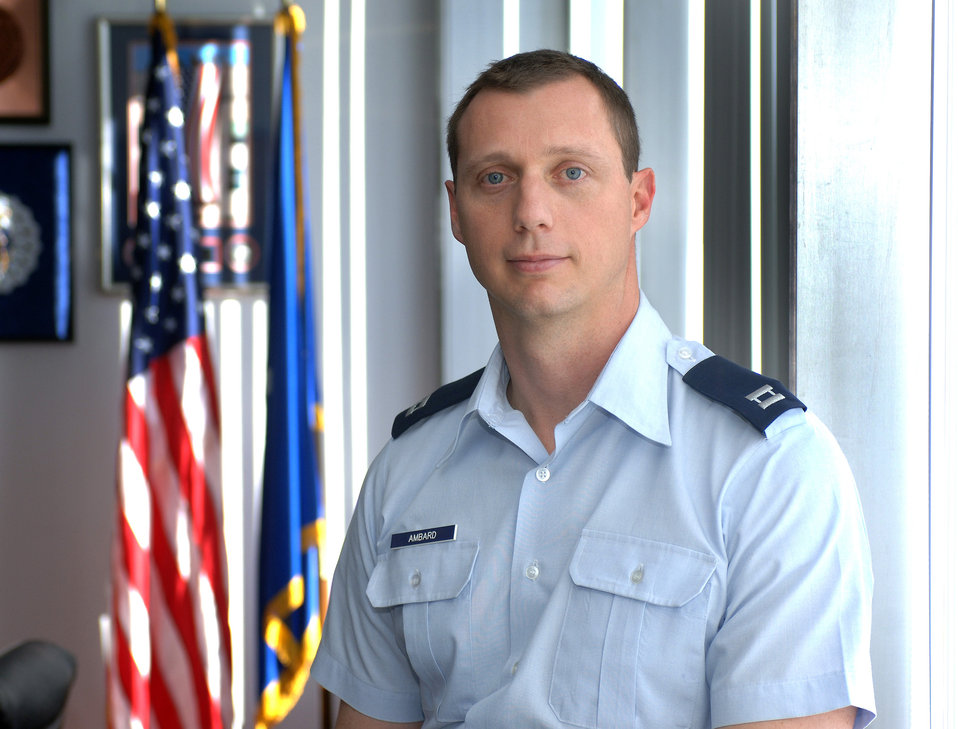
Major Ambard

Maj. Philip D. Ambard gave the ultimate sacrifice in service to the U.S. when he was killed April 27, 2011, in Kabul.